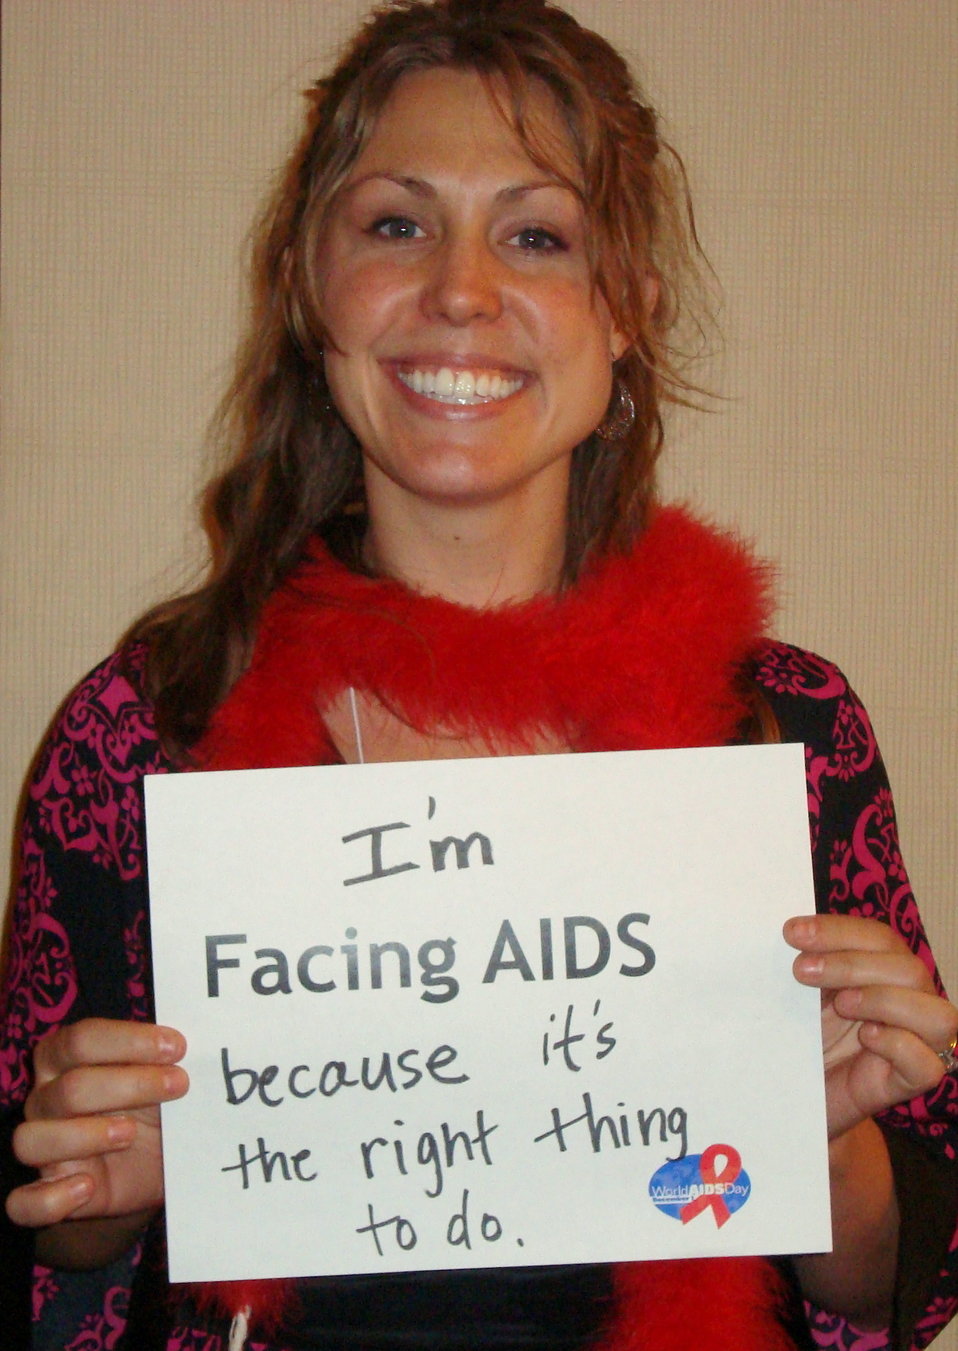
FacingAIDSCampaign 050